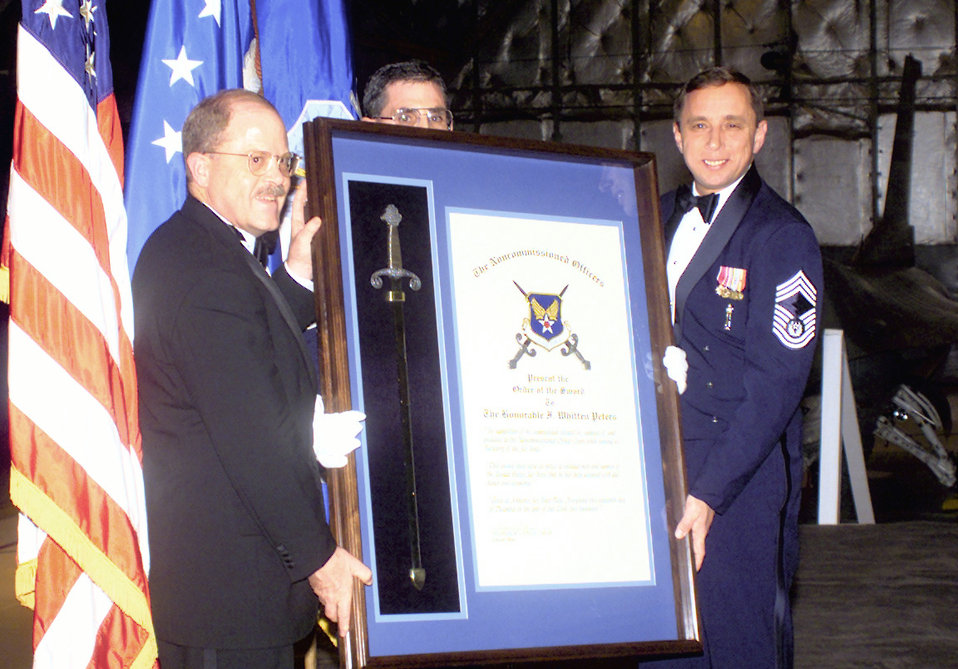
Order of the Sword

ANDREWS AIR FORCE BASE, Md. -- Secretary of the Air Force Whit Peters receives the Air Force Order of the Sword from Chief Master Sgt. of the Air Force Jim Finch at an induction ceremony held here Dec. 16. The Order of the Sword is the highest honor Air Force enlisted members can bestow upon their leaders. Induction is limited to those leaders held in the highest regard by Air Force enlisted men and women.